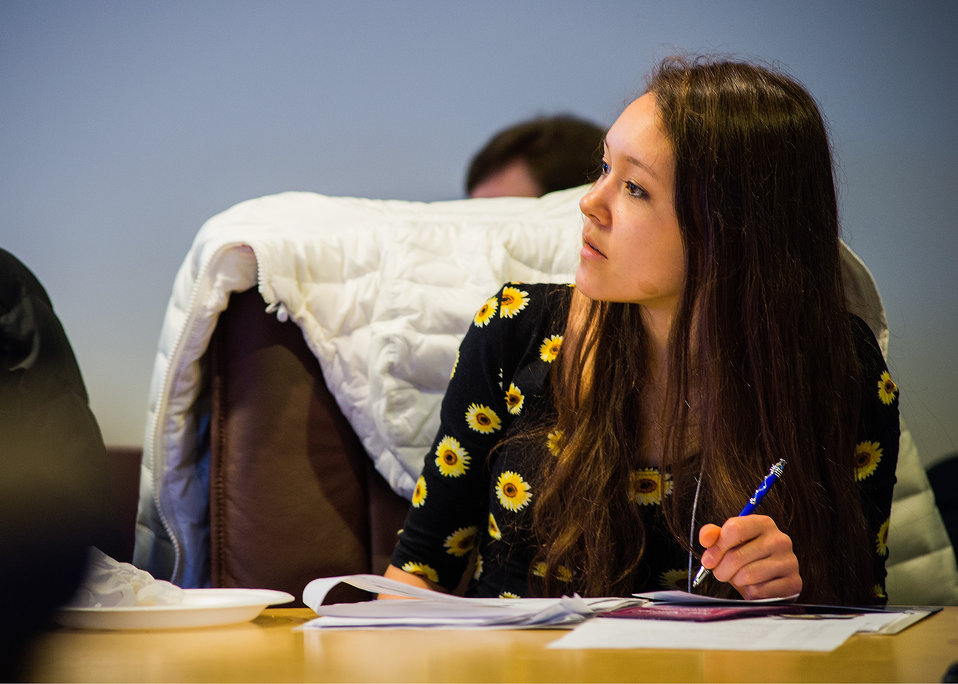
Nicola Kubzdela, a student from Thomas Jefferson High School of Science and Technology in Alexandria, VA. listens to a speaker during tthe U.S. Department of Agriculture (USDA), Office of the Chief Information Officer (OCIO) IT Job Shadow Day, Tuesday, Mar. 25, 2014. The OCIO IT Job Shadow Day hosts students from local high schools in the Washington, D.C. area annually with IT professionals and agricultural specialists from a variety of mission areas at USDA.